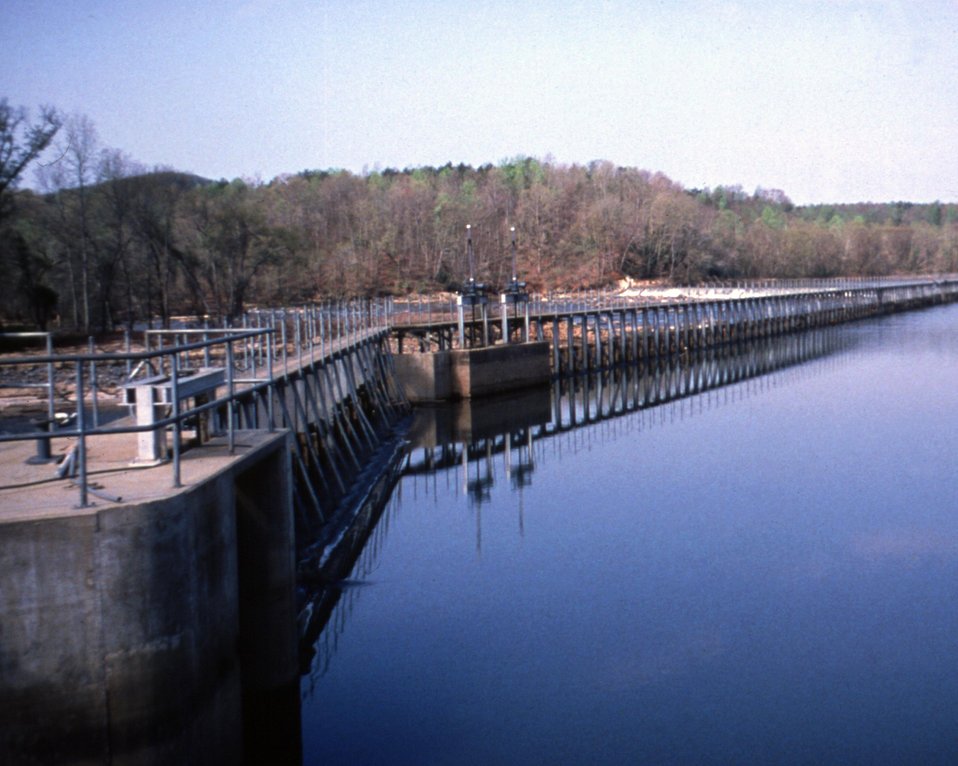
GENERAL VIEW OF FLASH BOARDS AND DAM.

THE DOE SMALL-SCALE HYDROPOWER PROGRAM CONSISTS OF 19 PROJECTS AND DEMONSTRATES THE VIABILITY OF SMALL-SCALE HYDRO-POWER WITH AVAILABLE TECHNOLOGY. THE BROAD RIVER PROJECT, BEGUN IN JANUARY, 1983, WENT ON LINE DECEMBER 27, 1987. UTILIZING ONE OPEN-PIT TUBULAR TURBINE THAT PRODUCES A MAXIMUM OF 4,140 KILOWATTS, THE DAM PROVIDES A GROSS HEAD OF 20.2 FEET WITH AN ANNUAL STREAM FLOW OF 2,472 CFS.